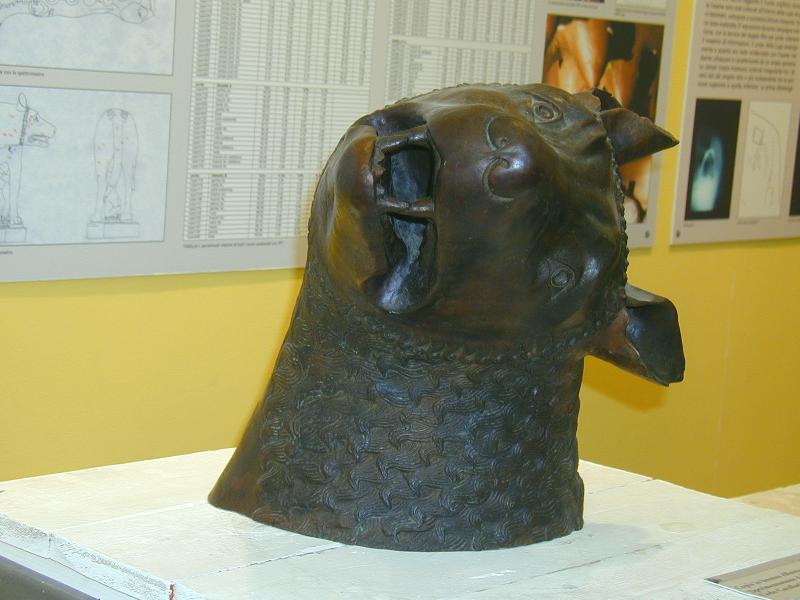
010218 campidoglio lupa in restauro